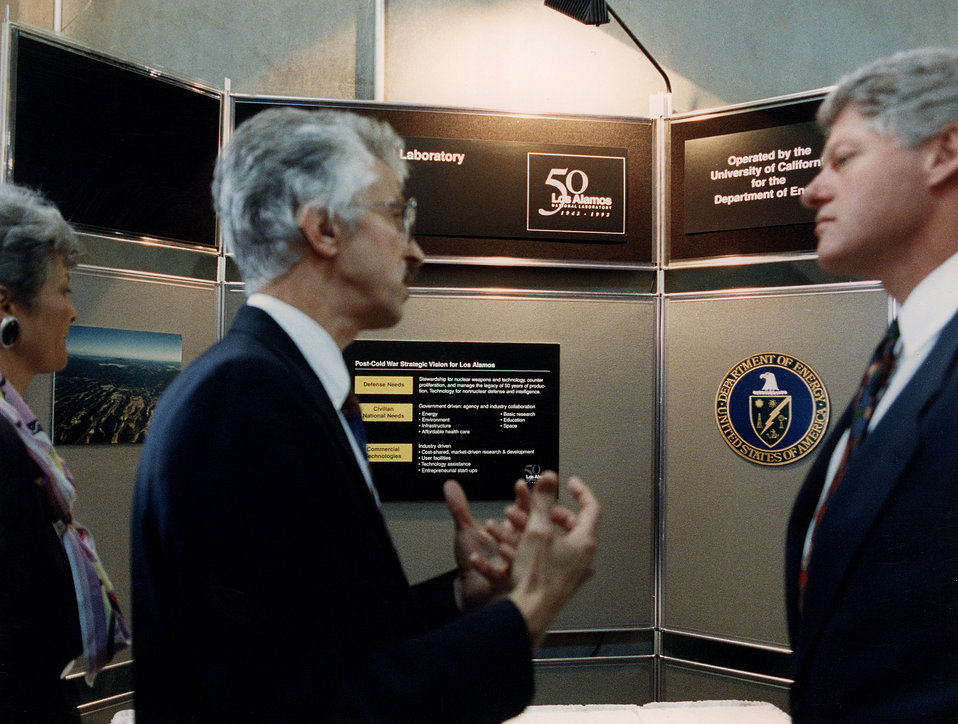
President Clinton Tours LANL, 1993

Since 1977, the people of the U.S. Department of Energy have been delivering the science, innovation and expertise required to advance America's energy, economic and national security. In this photo taken in 1993, Director of Los Alamos National Laboratory (LANL) Dr. Siegfried Hecker gives President Bill Clinton and Secretary of Energy Hazel O'Leary a tour of the Lab. That year, LANL marked its 50th anniversary. | Photo courtesy of the Department of Energy.

Photo of the Week: October 5, 2012